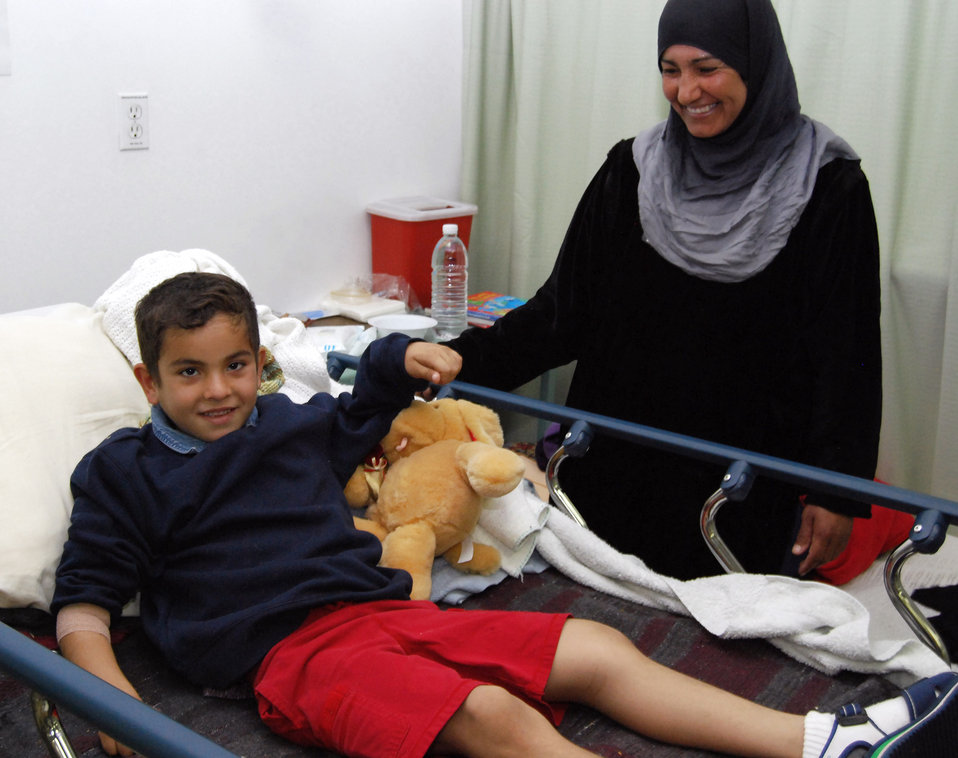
Iraqi aeromedical evacuation mission continues to evolve

Mustafa Jasim smiles for a photograph in the Air Force Theater Hospital's intermediate care ward at Joint Base Balad, Iraq, Dec. 20. Mustafa, his brother Ali, and a third patient, Dhafir Kurdi Hilal, were aeromedically transported from Balad to the 86th Combat Support Hospital in Baghdad via Iraqi air force Mi-17 Hip helicopters. Also pictured here is Mustafa's mother, Saadia Ibaid Jasim.